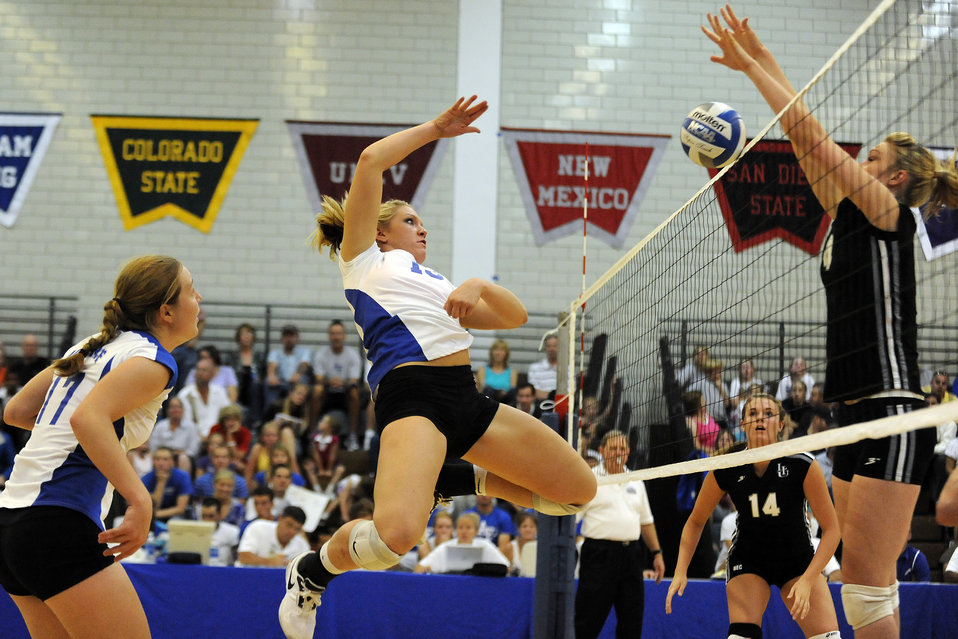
Cadet's show promise during women's volleyball tournament

Falcon Caitie Campbell tries to spike the ball over the net during the second game of their season opener against Long Island College Aug. 27, 2010, at the U.S. Air Force Academy in Colorado Springs, Colo. The Falcons won 3-2 over Long Island with scores of 25-14, 22-25, 29-31, 25-19 and 15-9.